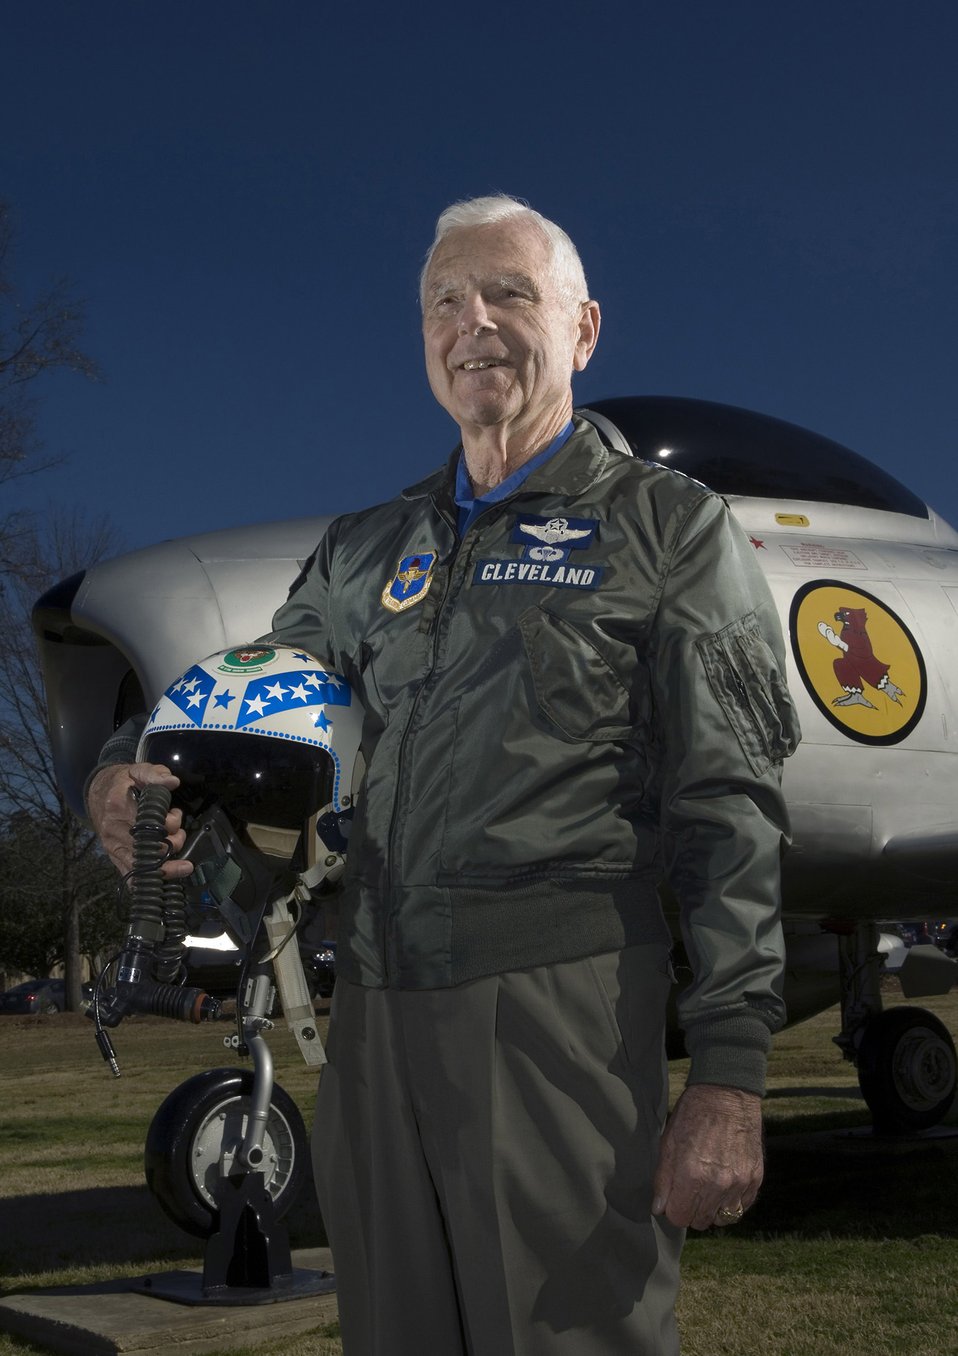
Retired general becomes Air Force's newest fighter ace

Retired Lt. Gen. Charles G. Cleveland stands before a remake